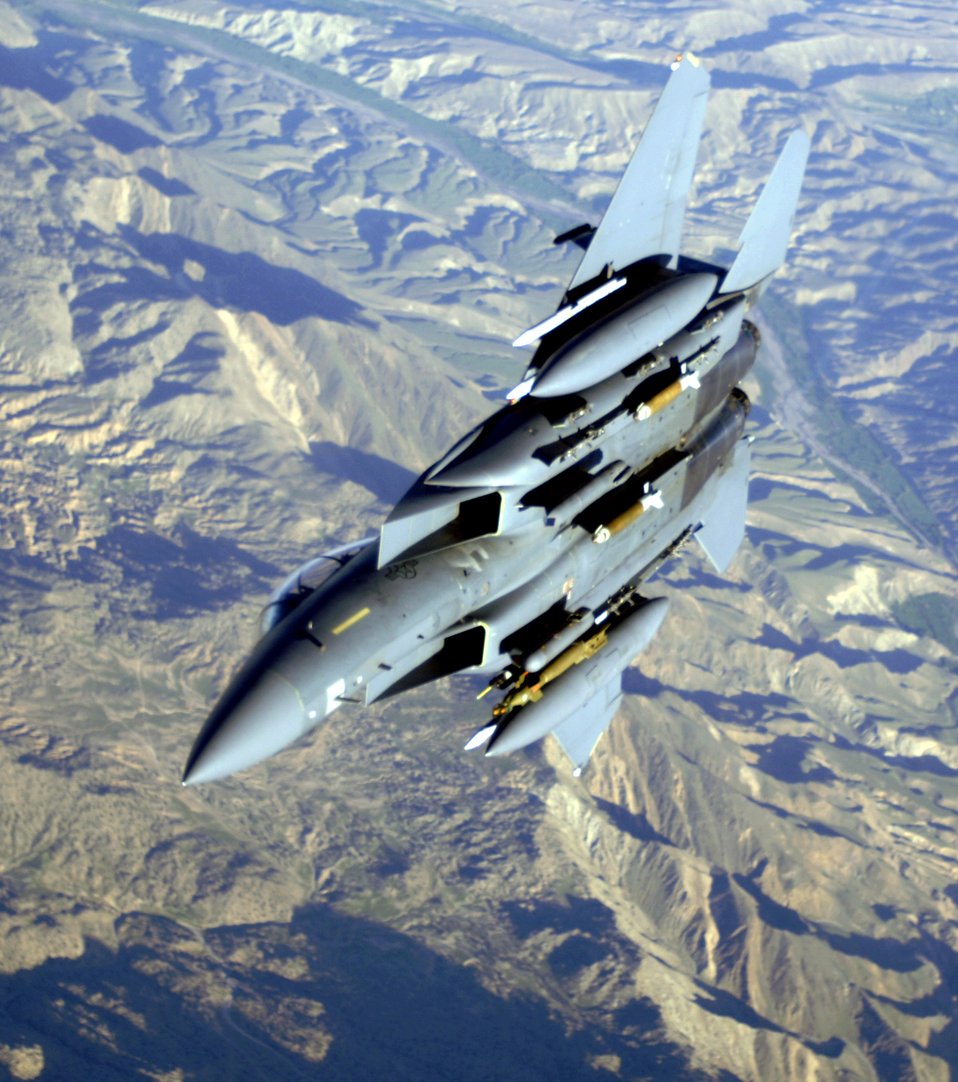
Operation Mountain Lion roars

An F-15E Strike Eagle soars over the mountains of Afghanistan in support of Operation Mountain Lion on Wednesday, April 12, 2006. The crew and fighter are deployed to the 336th Expeditionary Fighter Squadron in Southwest Asia from the 4th Fighter Wing at Seymour Johnson Air Force Base, N.C.